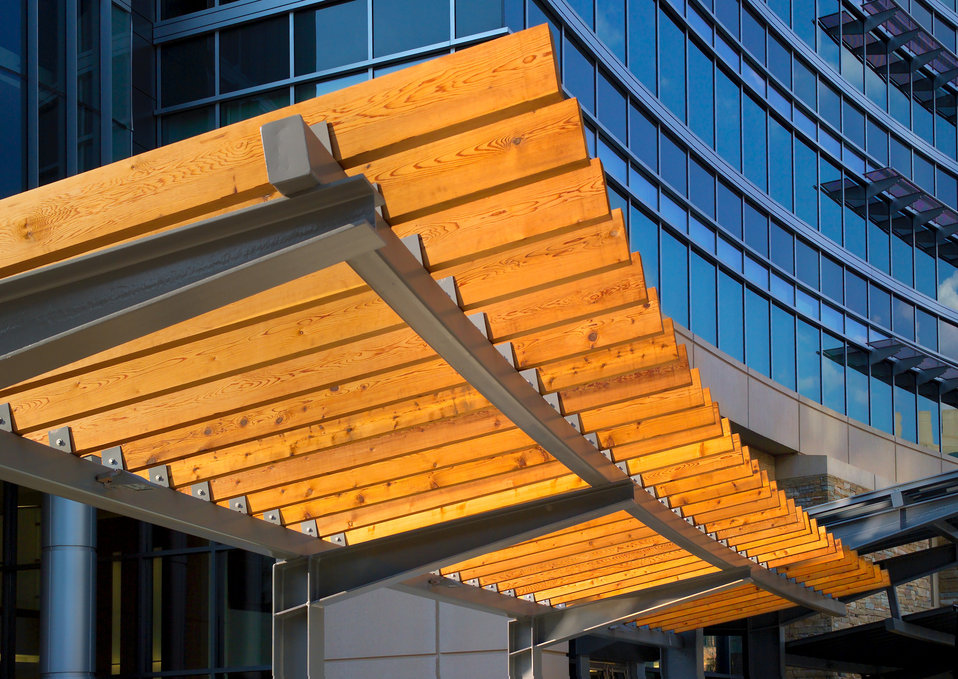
This photograph depicted an exterior view of Building 21, located at the Centers for Disease Control and Prevention, CDC, headquarters, also referred to as the Roybal Campus. This campus is situated in Atlanta, Georgia.